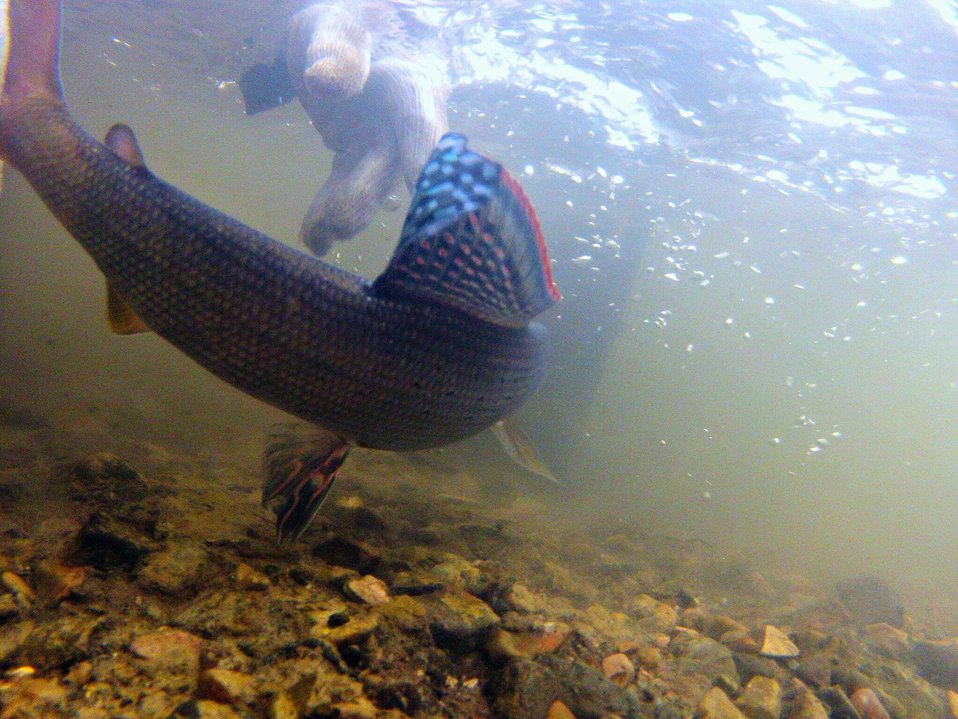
Iridescent fins.

A glacial relic, Arctic grayling in Montana are a State Species of Special Concern. This specimen, collected in our fish trap, provided pertinent data. Being released upstream of the trap allows for the fish to continue its spawning migration.

The trap, located on Red Rock Creek, Red Rock Lakes National Wildlife Refuge, Montana, is one of the sampling and monitoring methods utilized by Montana Fish and Wildlife Conservation Office personnel to assess fish population trends.